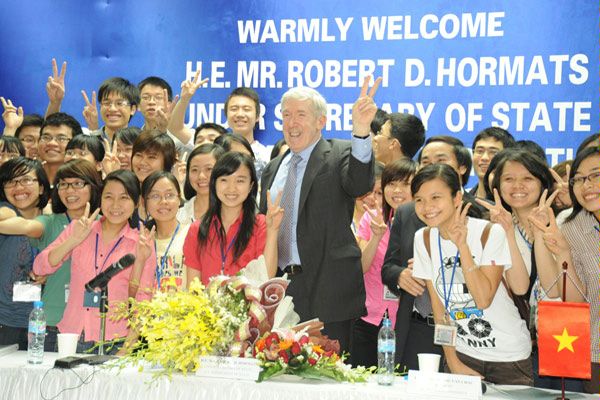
Under Secretary Hormats in Vietnam

Under Secretary for Economic, Energy and Agricultural Affairs Robert D. Hormats speaks with students after his speech at the Foreign Trade University in Hanoi, Vietnam, April 12, 2010.